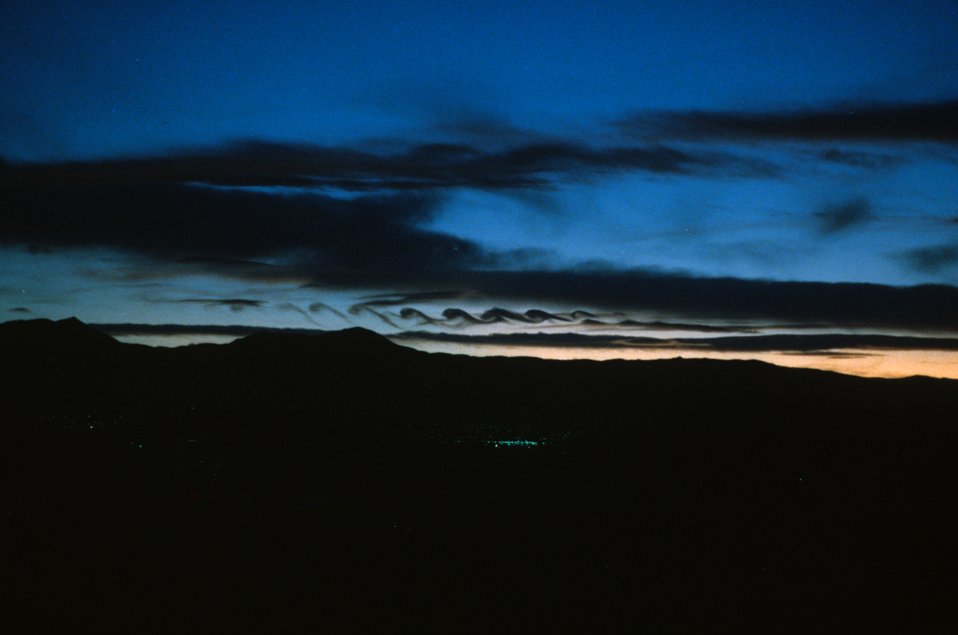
Helmholtz wave clouds over the Front Range of the Rocky Mountains.